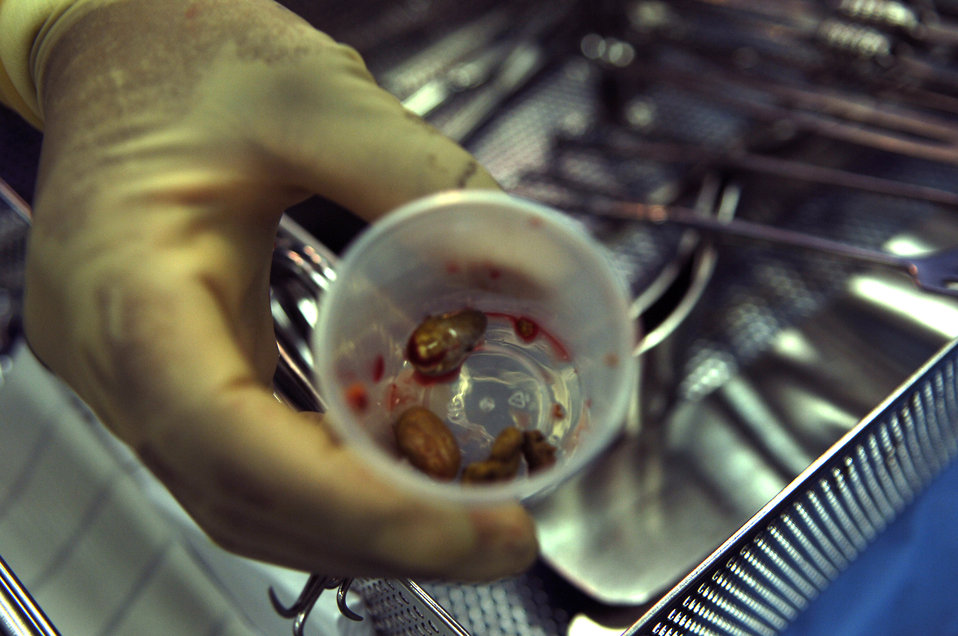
Tiny stones cause boulder-sized pain for deployed servicemembers

An operating room technician displays kidney stones removed directly from a patient?s kidney during a surgery at the Air Force Theater Hospital at Balad Air Base, Iraq, March 26. Doctors at the Air Force Theater Hospital have removed stones the size of a table tennis ball.